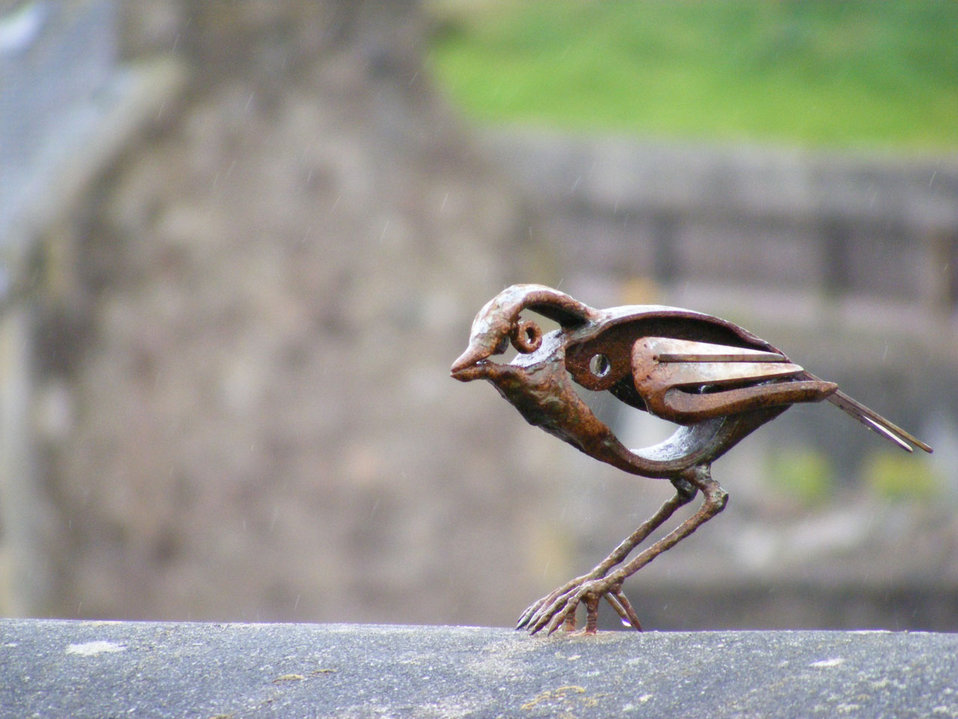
Metal sculpture

Bird sculpture.